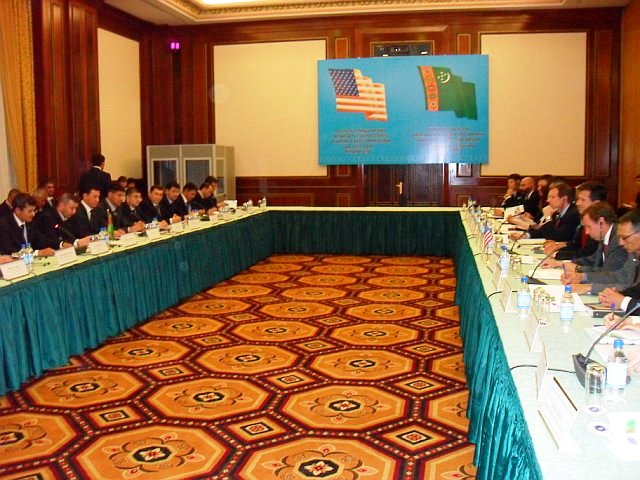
Assistant Secretary Blake Leads Official Delegation to First Annual Bilateral Consultations With Turkmenistan Government

U.S. Assistant Secretary of State for South and Central Asian Affairs Robert O. Blake, accompanied by U.S. Assistant Secretary for Democracy, Human Rights and Labor Michael Posner and Director for Central Asia at the National Security Council, Kurt Donnelly, leads a large official delegation to the first Annual Bilateral Consultations (ABCs) with the Government of Turkmenistan in Ashgabat on June 16, 2010.